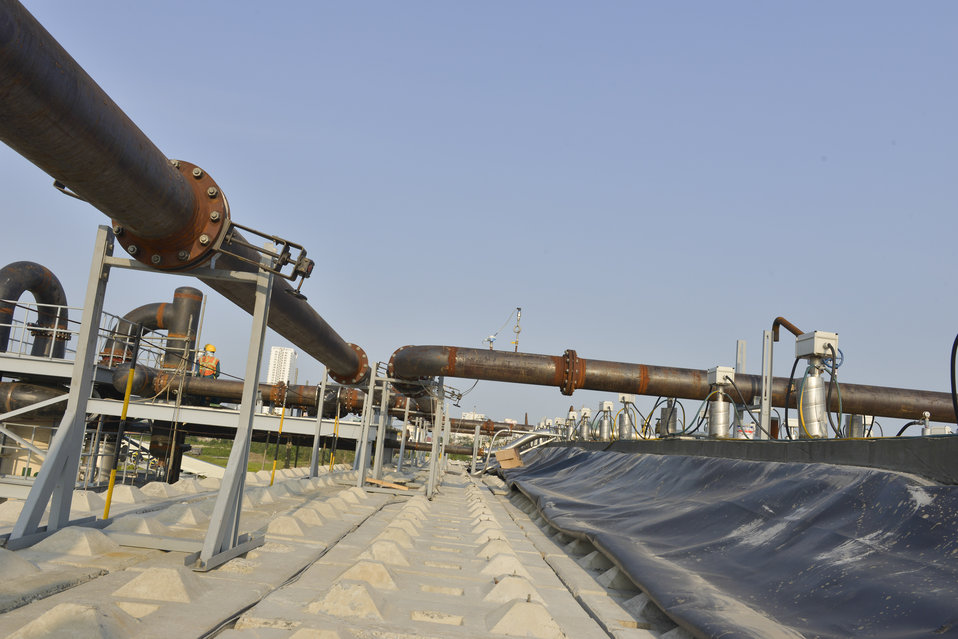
Progress at the Environmental Remediation of Dioxin Contamination at Danang Airport Project

March 24, 2014.